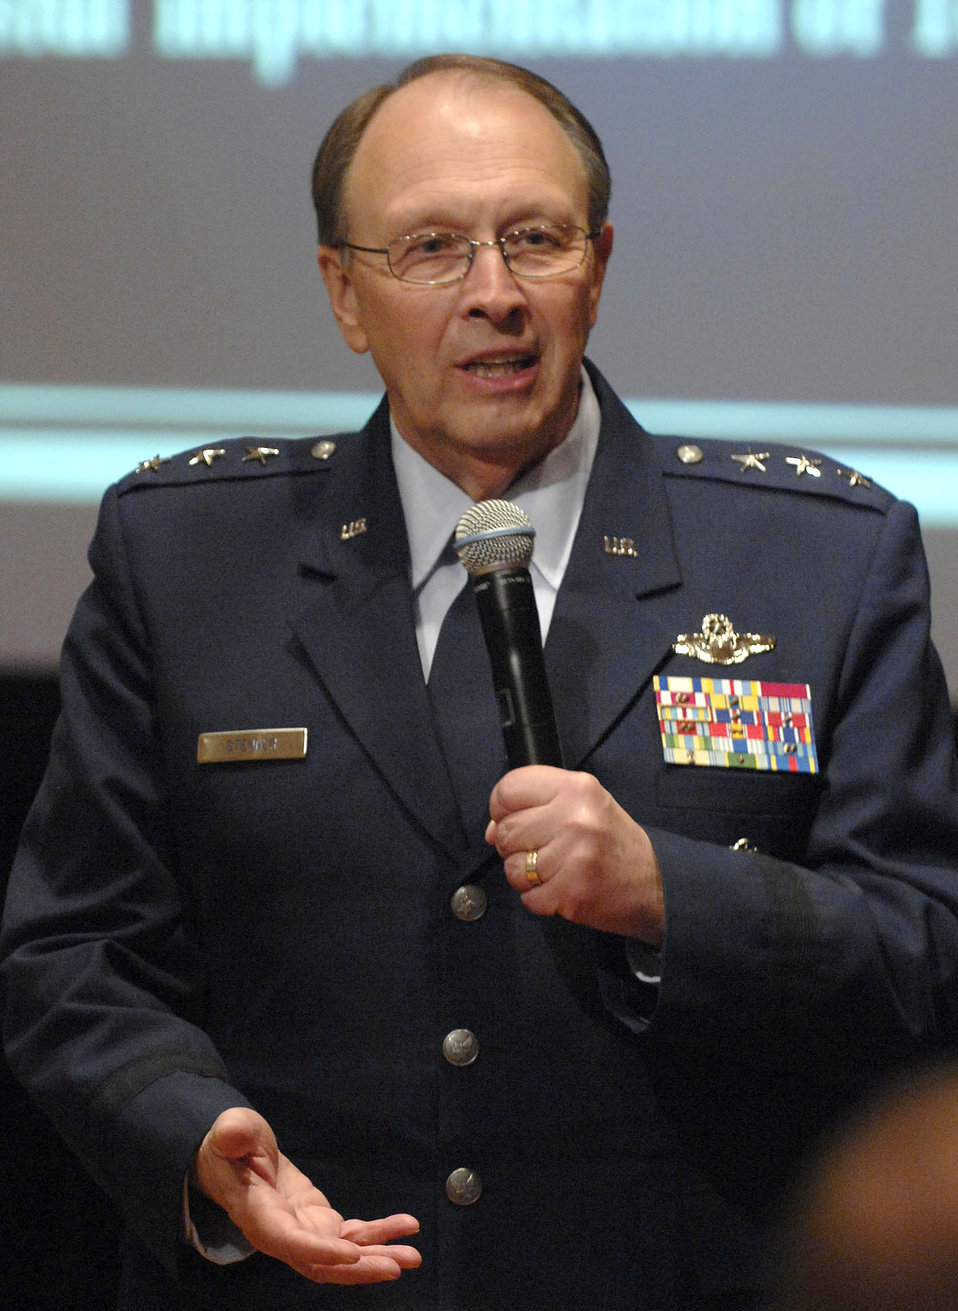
Lt. Gen. Stenner

Lt. Gen. Charles E. Stenner, chief of the Air Force Reserve and the commander of Air Force Reserve Command, speaks during the Air Force Reserve Command Senior Leaders Annual Conference May 16, 2011.